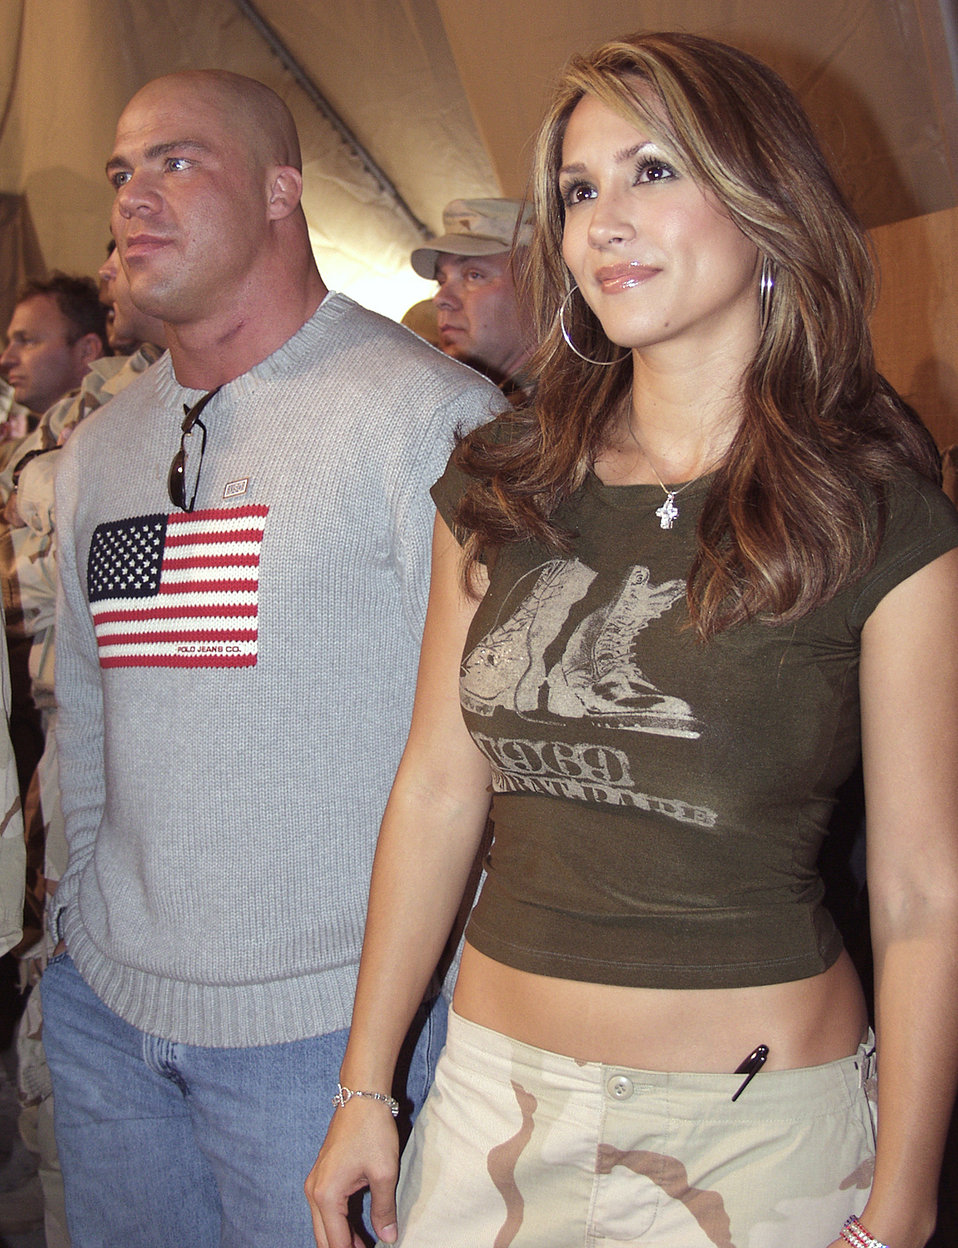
Stars tour Iraq for holidays

KIRKUK AIR BASE, Iraq -- Olympic gold medalist an professional wrestler Kurt Angle and former model and television personality Leeann Tweeden are visiting military forces as part of a United Service Organizations-sponsored tour.